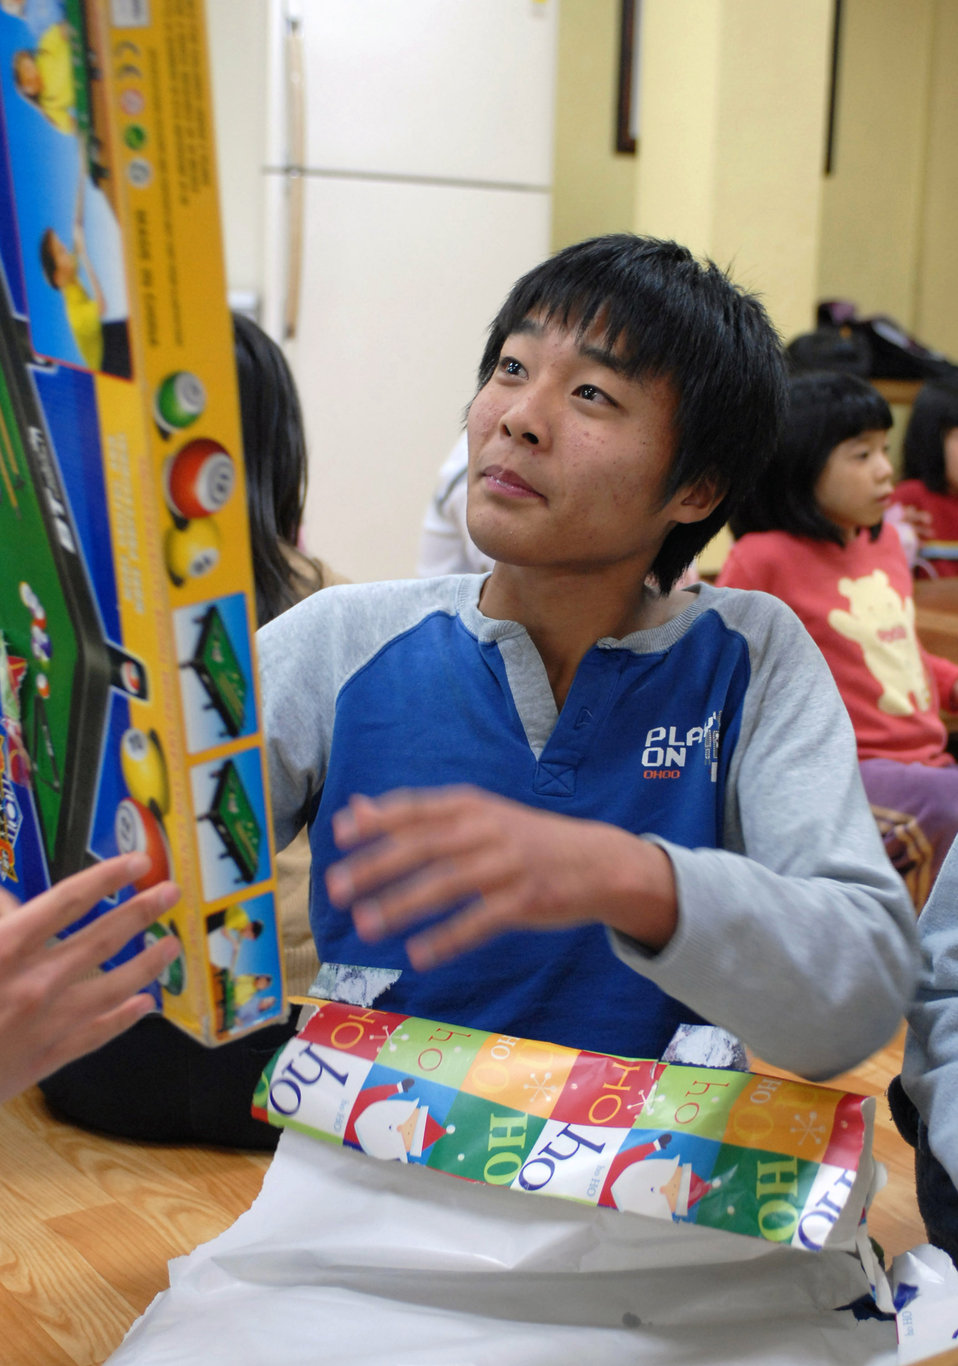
Airmen deliver Christmas to South Korean orphanage

A child from the Kae Jong orphanage opens a gift during an Airmen Committed to Excellence Christmas Party Dec. 15 in Kae Jong, South Korea. Airmen from Kunsan Air Base, South Korea, spent the afternoon handing out gifts, coloring, eating, and playing with children during the visit. The Airmen donated various gifts to include beanie babies and a PlayStation 2.